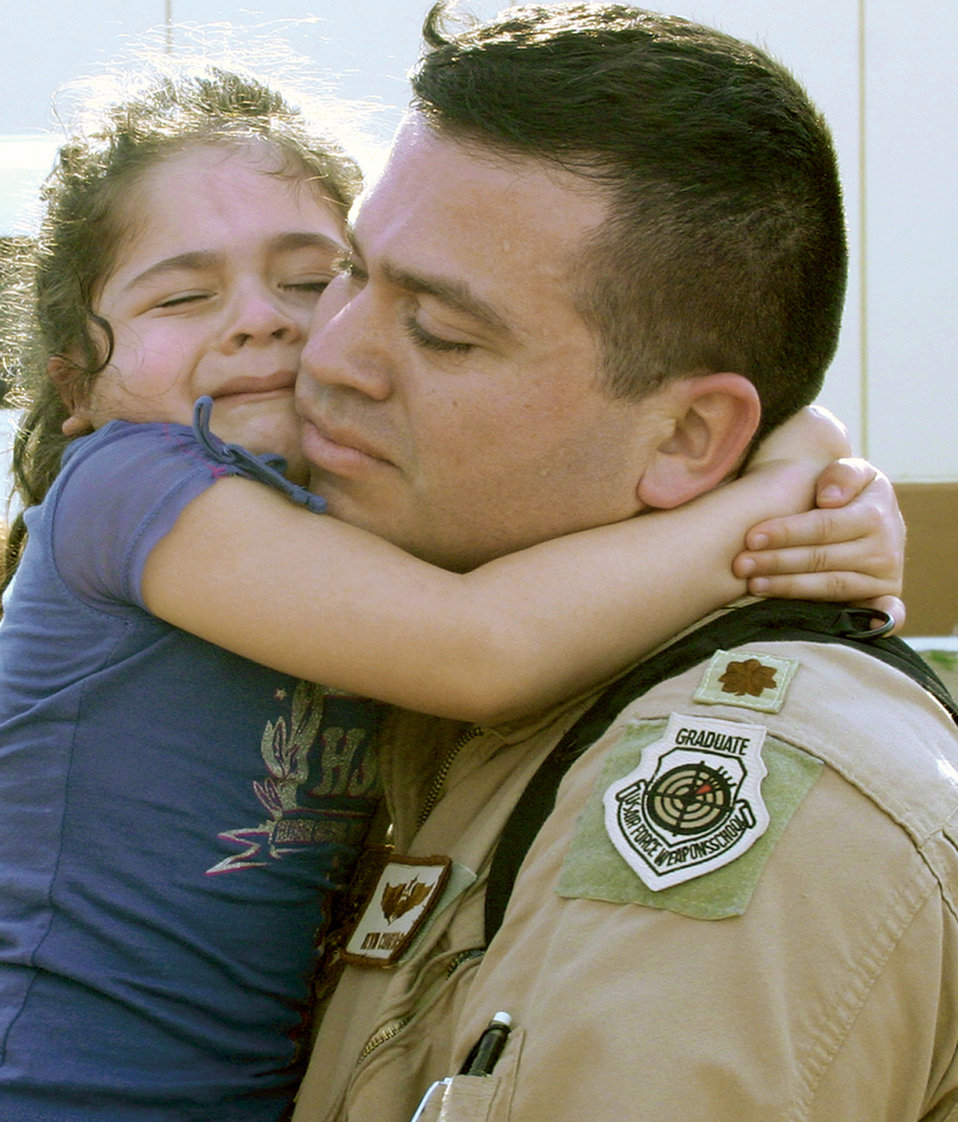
Welcome home, Daddy!

Maj. Kevin Cuartas greets his daughter after returning to Tinker Air Force Base, Okla., May 27, 2010, after a four-month deployment to Southwest Asia. Major Cuartas is the chief of weapons and tactics for the 965th Airborne Air Control Squadron.